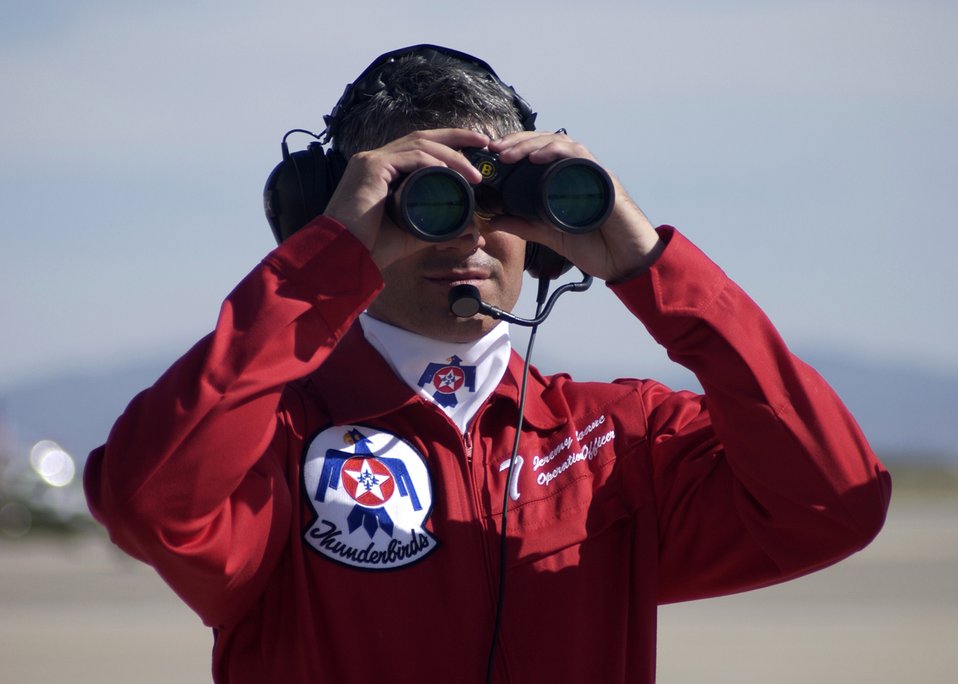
I spy rolling Thunder

DAVIS-MONTHAN AIR FORCE BASE, Ariz. -- Maj. Jeremy Sloane looks for nearby aircraft to ensure they stay out of the path of the Thunderbirds' performance at an air show here April 2. The team performs in F-16 Fighting Falcons, and is stationed at Nellis Air Force Base, Nev. Major Sloane is the team's operations officer and flies the No. 7 jet.